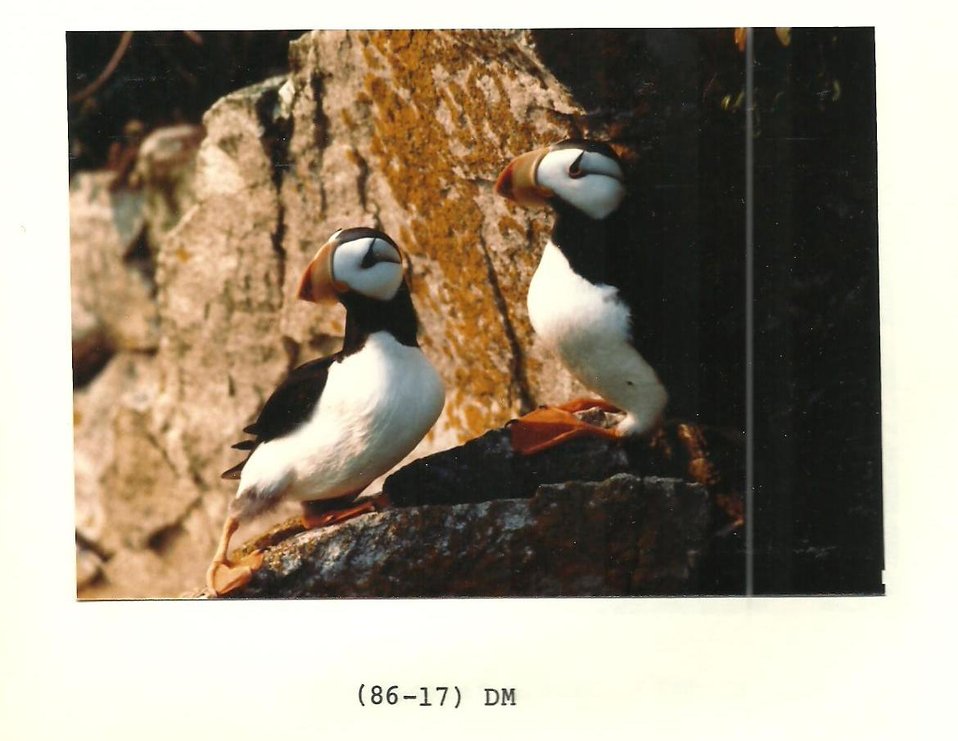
(1986) Horned Puffins

Credit: USFWS

Source and Contact: Kodiak National Wildlife Refuge